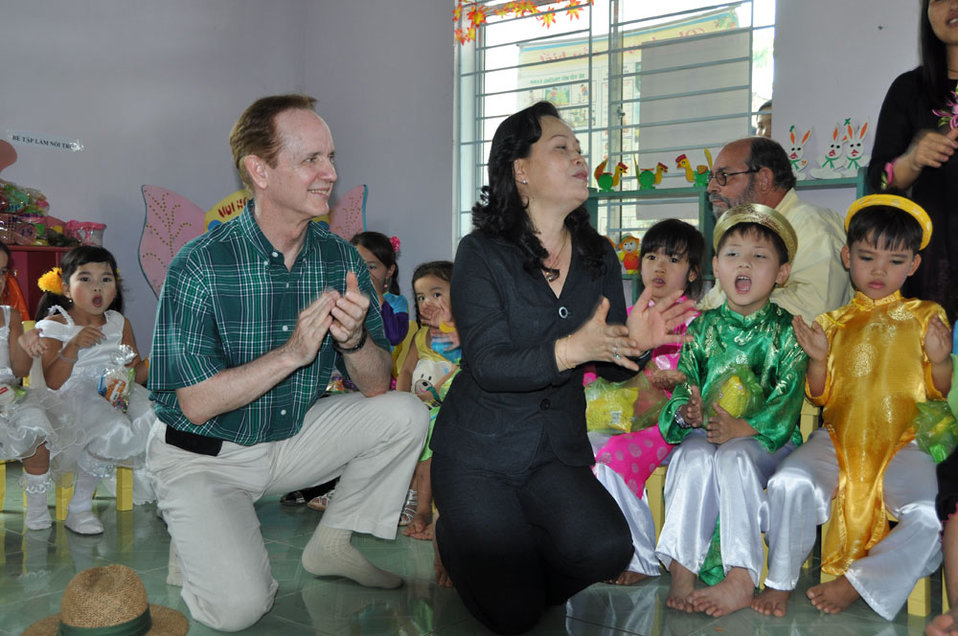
Children in Kon Tum, Vietnam, enjoy their new pre-schools refurbished with USAID funding